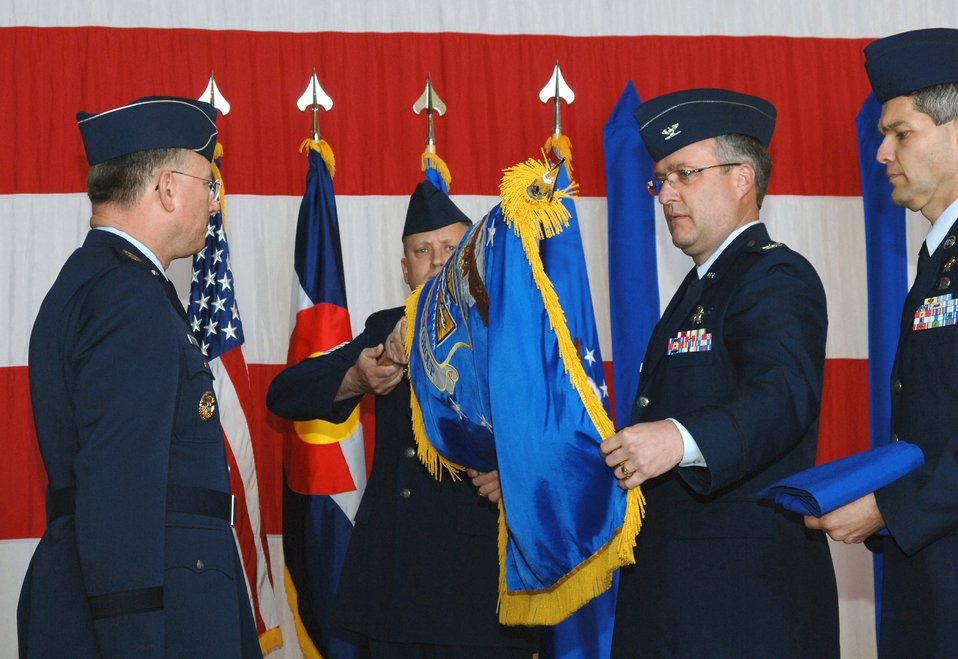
Reserve officials activate space wing

Col. Jeff Ansted (second from right) unfurls the 310th Space Wing colors during an activation ceremony April 4 at Peterson Air Force Base, Colo. Lt. Gen. John A. Bradley, (left) chief of Air Force Reserve and commander of Air Force Reserve Command, officially stood up the AFRC's first-ever space wing.